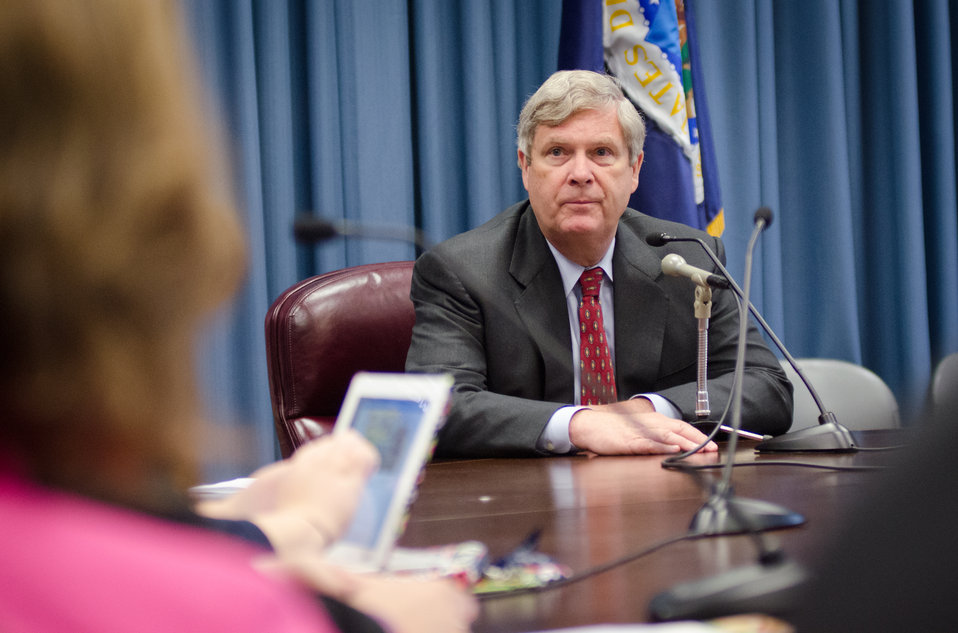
Agriculture Secretary Tom Vilsack speaks with and answers questions from farm broadcasters at the U.S. Department of Agriculture (USDA) on Tuesday, May 14, 2013, in Washington, D.C.